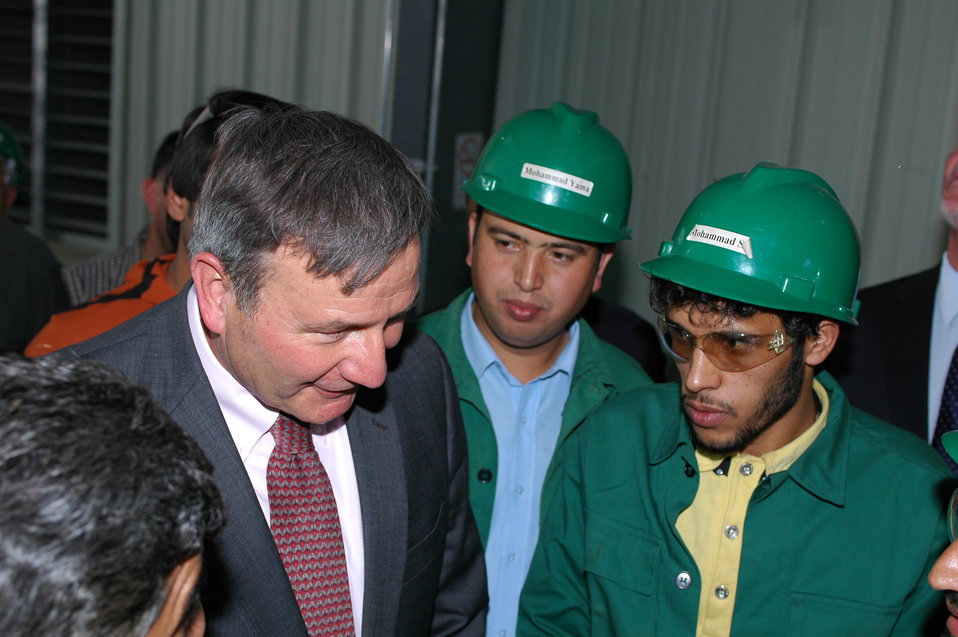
105 MW Tarakhil Power Plant Handover